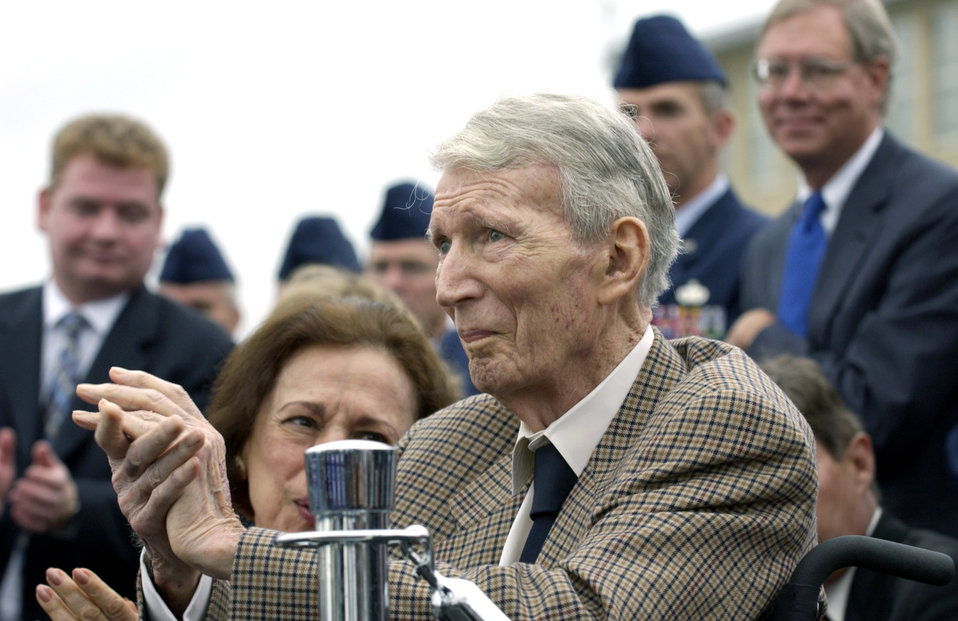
Thirteen years later, Air Force dedicates its memorial

ARLINGTON, Va. -- Retired Gen. Bernard A. Schriever, 94, considered to be the father of the Air Force's ballistic missile program, joined hundreds of people gathered for the official groundbreaking and site dedication ceremony on the site of the future national Air Force Memorial on Sept. 15. The 270-foot tall memorial is designed to honor all those who have served in the U.S. Air Force and its predecessor organizations.